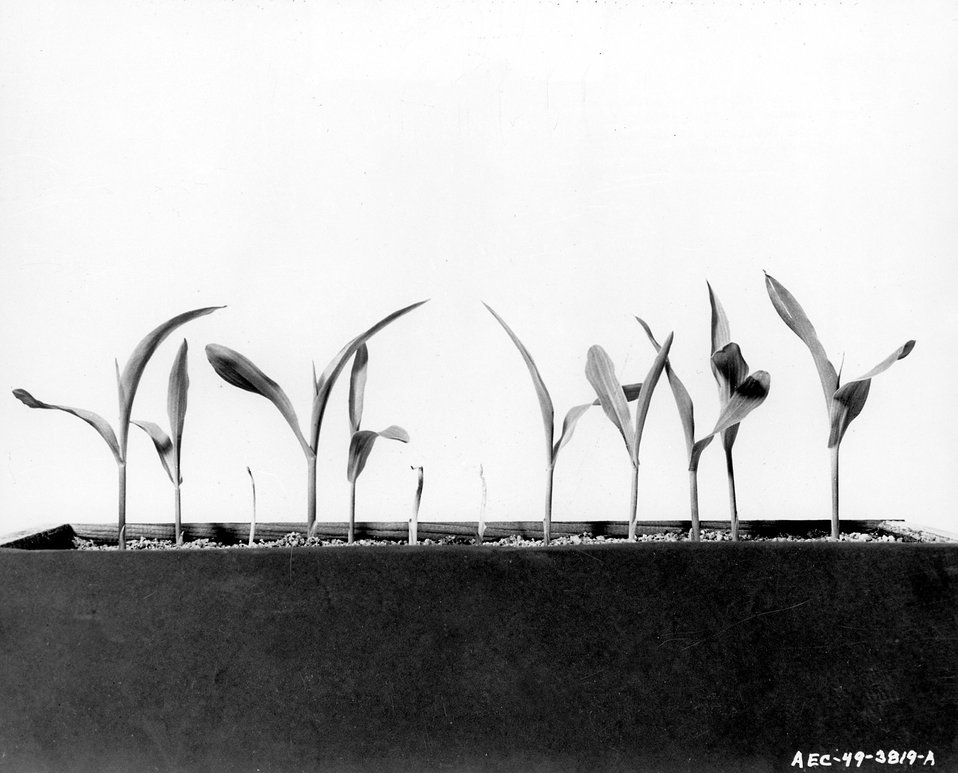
Plant from seed exposed to atomic bomb at Bikini shows effects of irradiation, in tests at Cal Tech.
c.1949